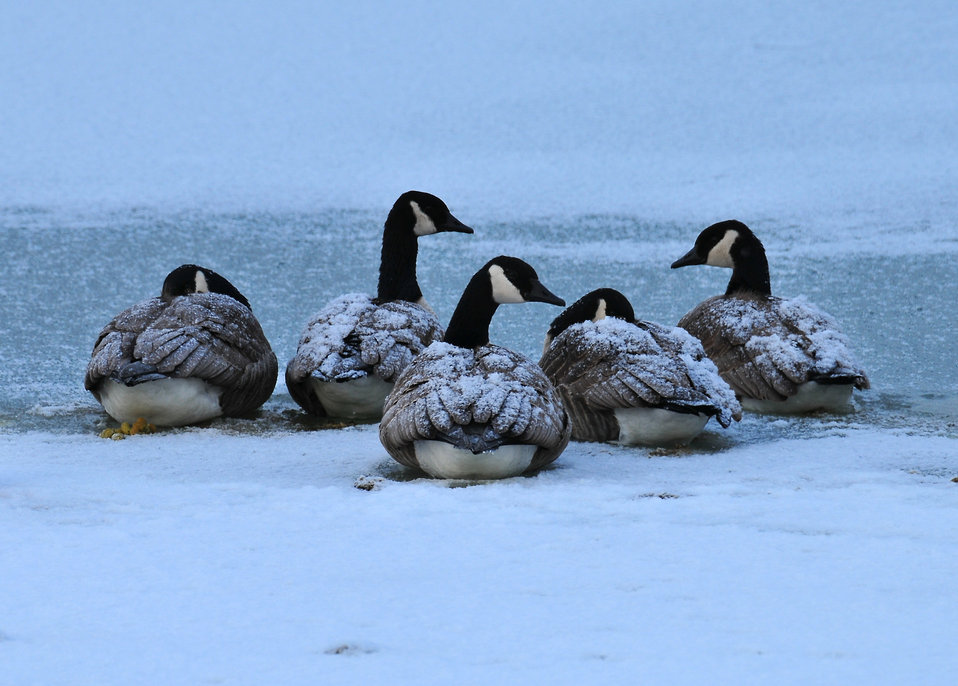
Canada geese by Doug Racine

Snow on Canada geese photographed at Montezuma National Wildlife Refuge by Doug Racine